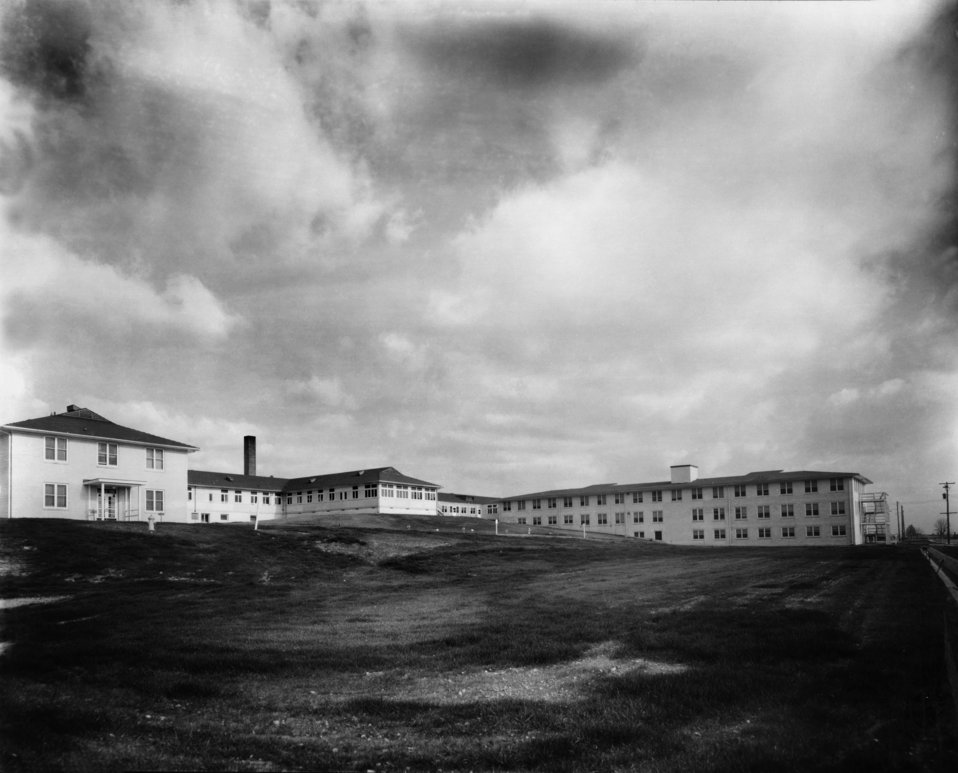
Oak Ridge Hospital

MED 123 DOE Photo by Ed Westcott 1944 Oak Ridge Tennessee